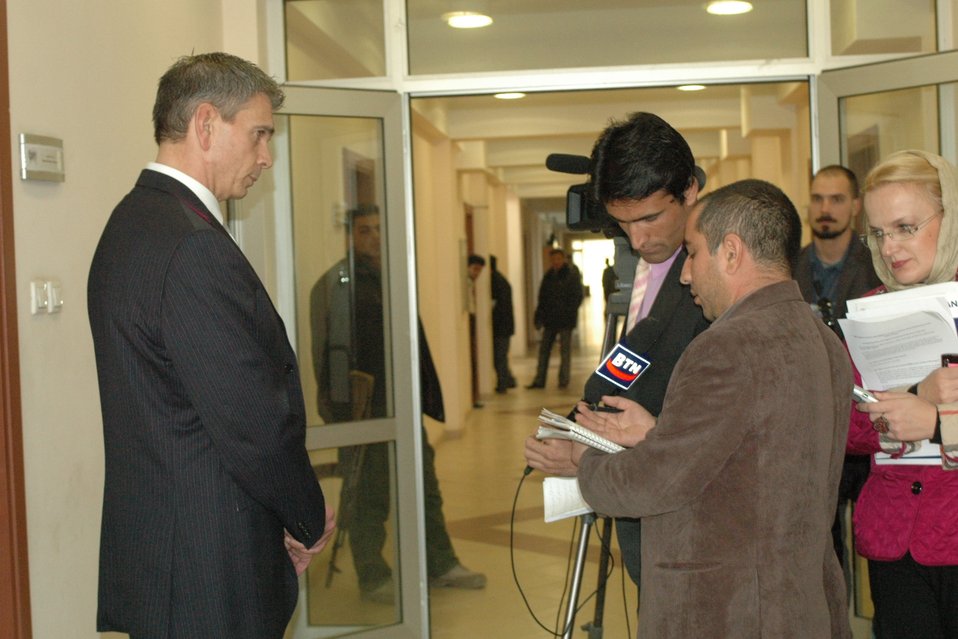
Community Based Stabilization Grants Ceremony, December 7, 2010